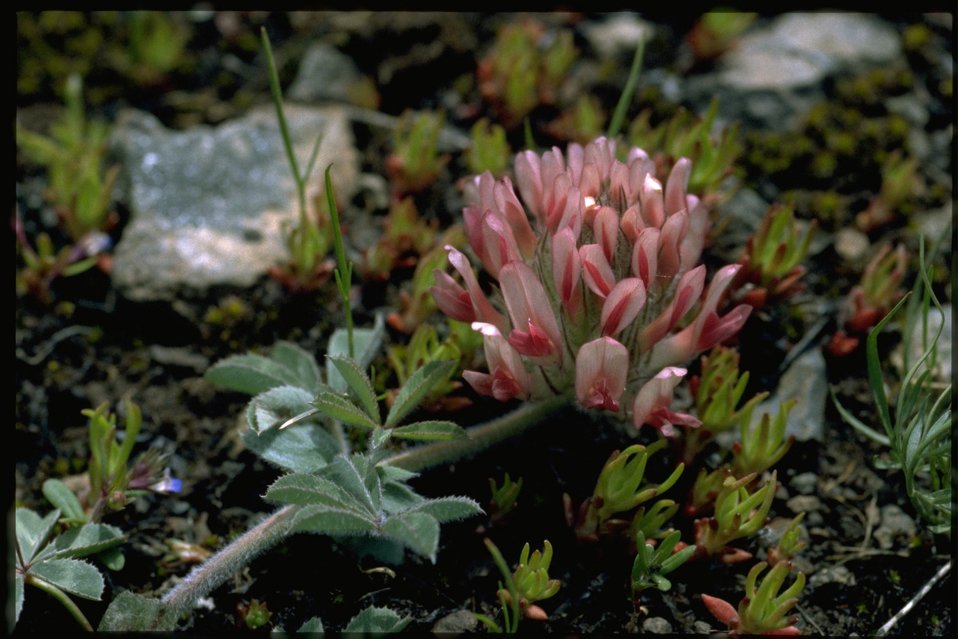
Medium shot of Big-headed clover, Trifolium macrocephalum.